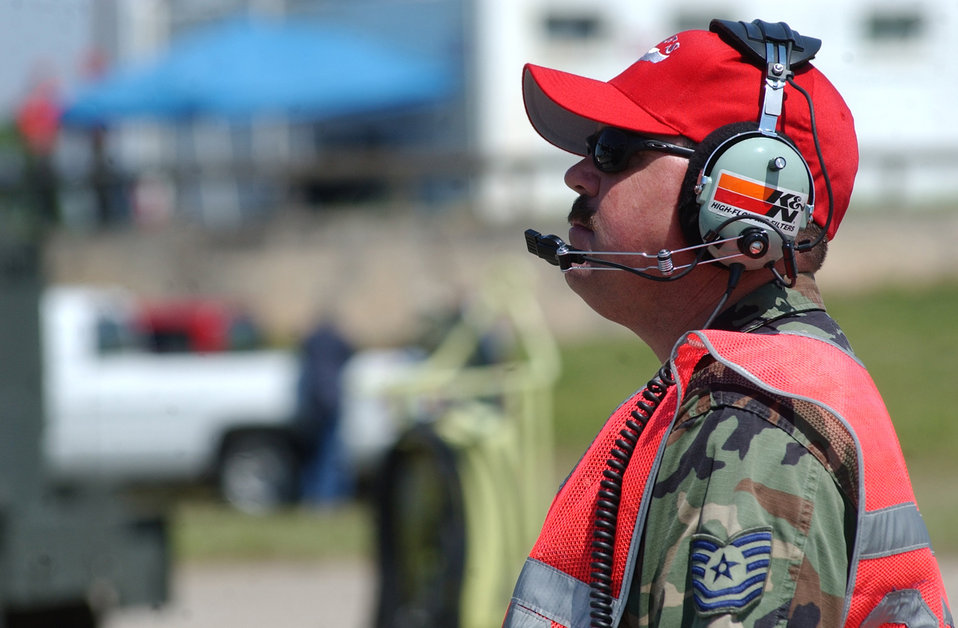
MAFFS training

GREENVILLE, N.C. -- Tech. Sgt. Todd Waugh watches a C-130 Hercules as it rolls into the Donaldson Flight Center at the annual Modular Airborne Fire Fighting Spring Training here recently. The MAFFS program is conducted between the military and the Forest Service to train flight crews on how to put out forest fires. Sergeant Waugh is a crew chief assigned to the 145th Airlift Wing in Charlotte.